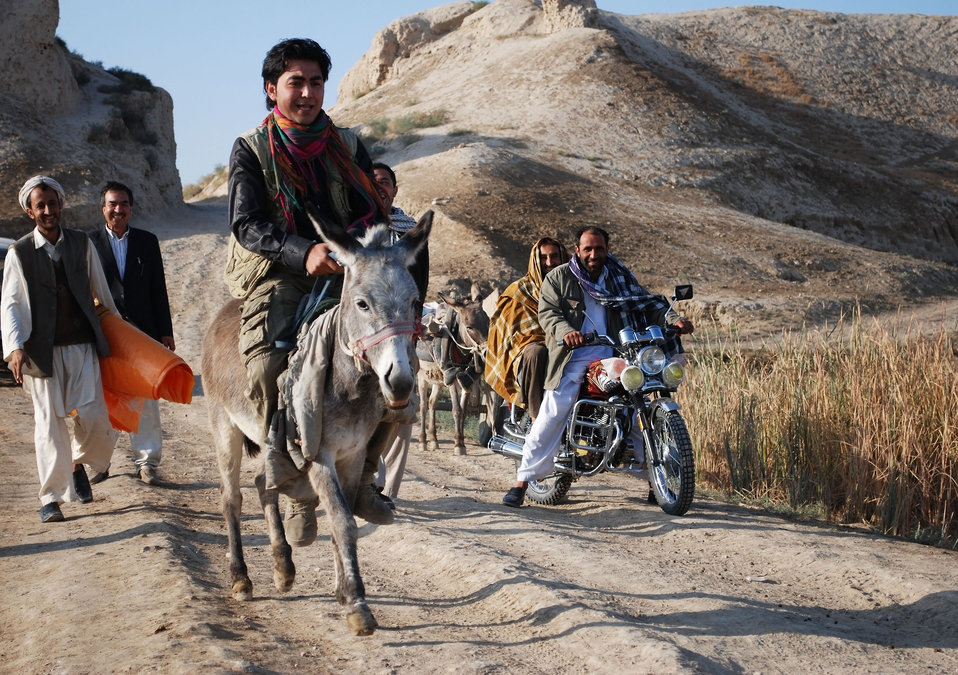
'On the Road' in Balkh Province